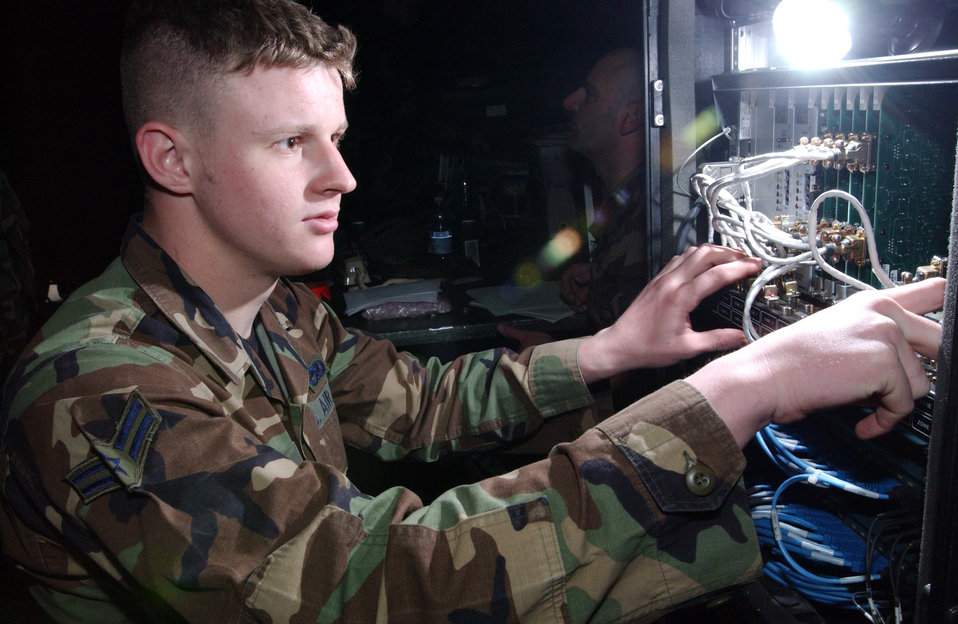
Flip the switch

SPANGDAHLEM AIR BASE, Germany -- Airman 1st Class Jesse Sargent verifies telephone switch systems settings during a Harley Saber exercise here April 19. Airman Sargent is a member of the 52nd Communications Squadron.